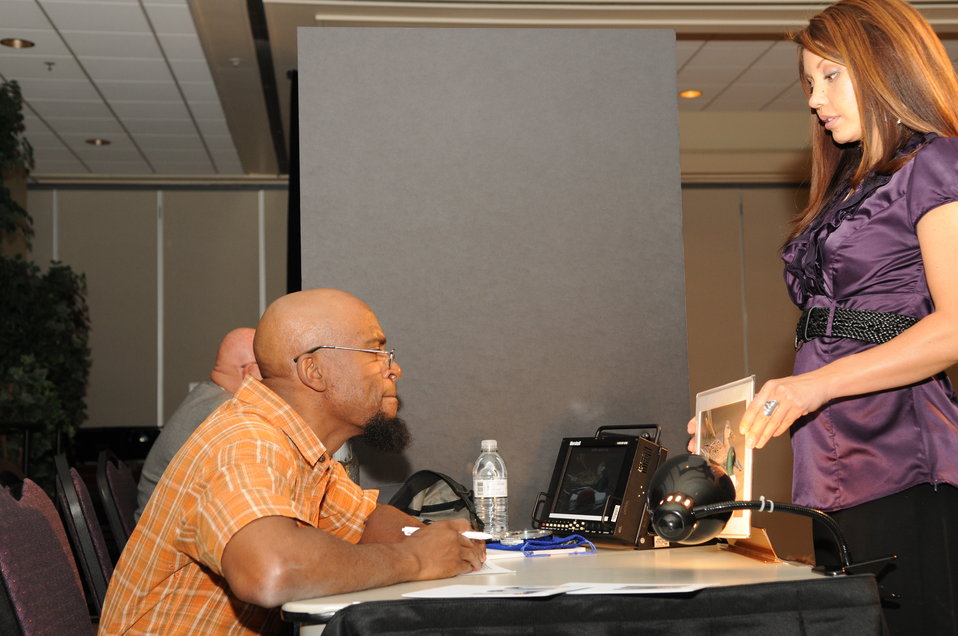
Judging

The U.S. Fish & Wildlife Service sponsored the 2012 Federal Duck Stamp Art Contest September 28 and 29 in Ogden, Utah, at Weber State University. A panel of five judges was responsible for choosing the art work used to design the 2013-2014 Migratory Bird Hunting and Conservation Stamp.